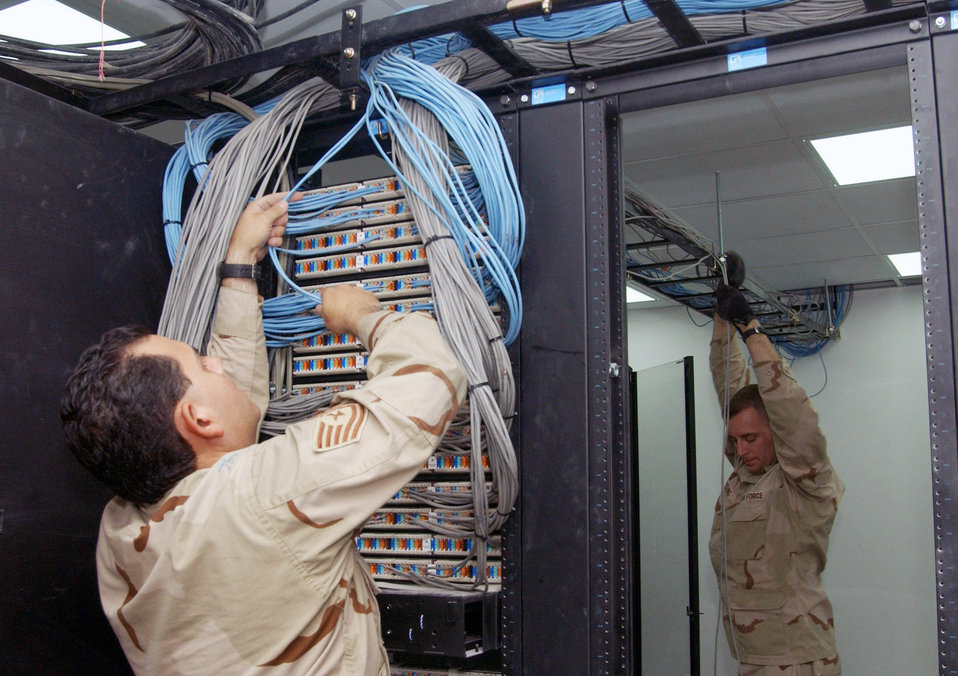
New hospital at Balad

Tech. Sgts. Chris Valadez and Jeremy Harding connect data communication cables into a hub in the new Air Force Theater Hospital being built at Balad Air Base, Iraq. The new hospital is replacing the old tent structure. Throughout the transition, Airmen have pulled more than 50,000 feet of computer cables; set up computers, phones and paging systems and more. The new hospital is scheduled to open Aug. 3. The NCOs are with the 332nd Expeditionary Medical Support Squadron.